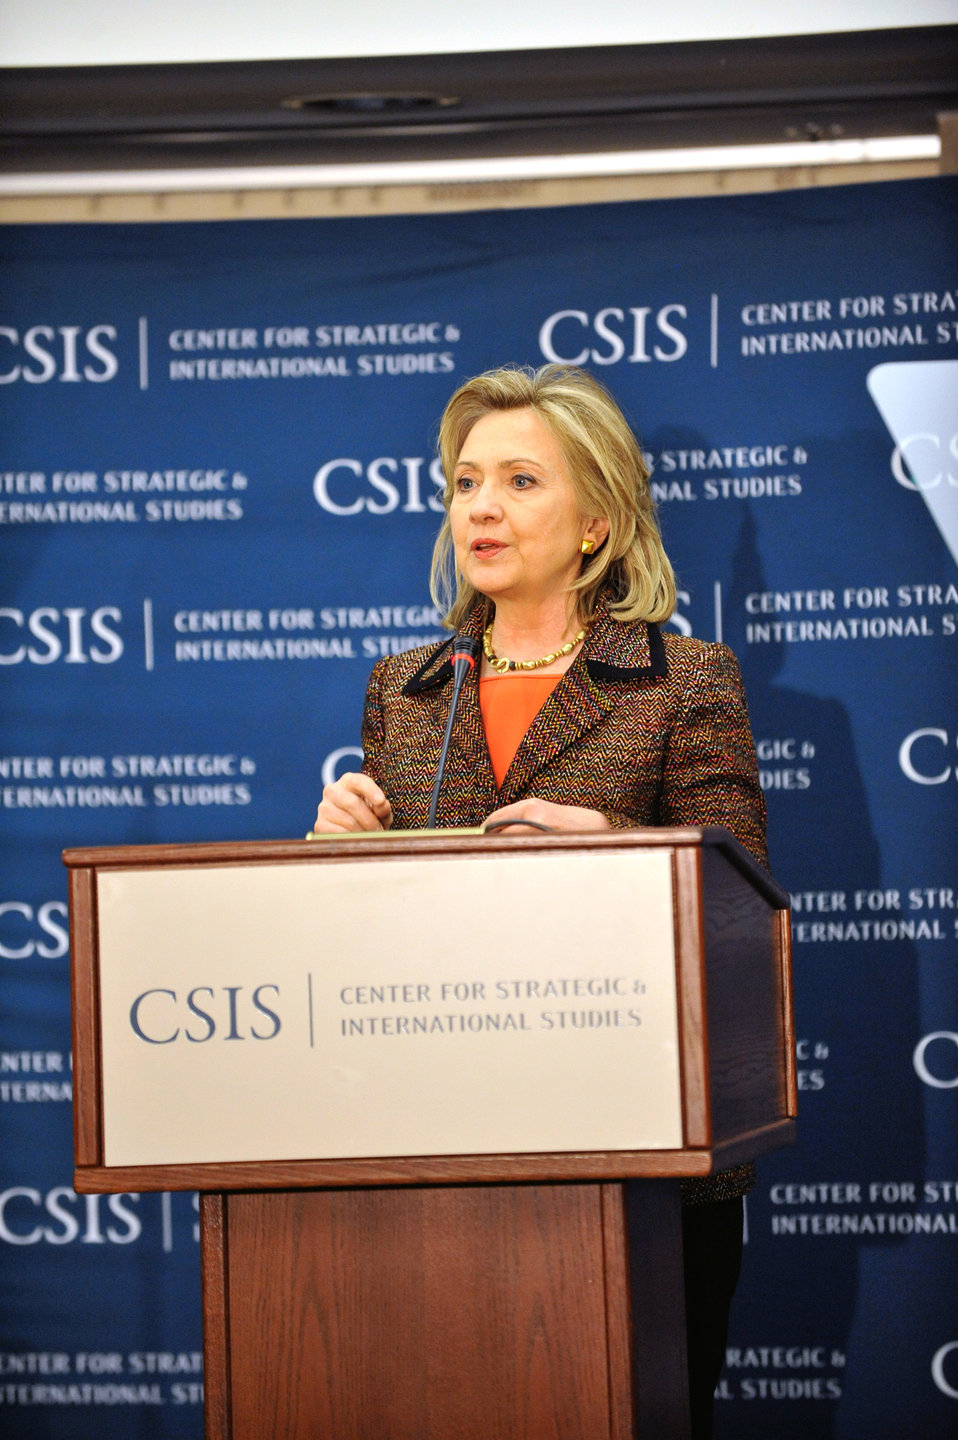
Secretary Clinton Delivers Remarks

U.S. Secretary of State Hillary Rodham Clinton delivers remarks at the Center for Strategic International Studies (CSIS) in Washington, D.C., on March 18, 2011.